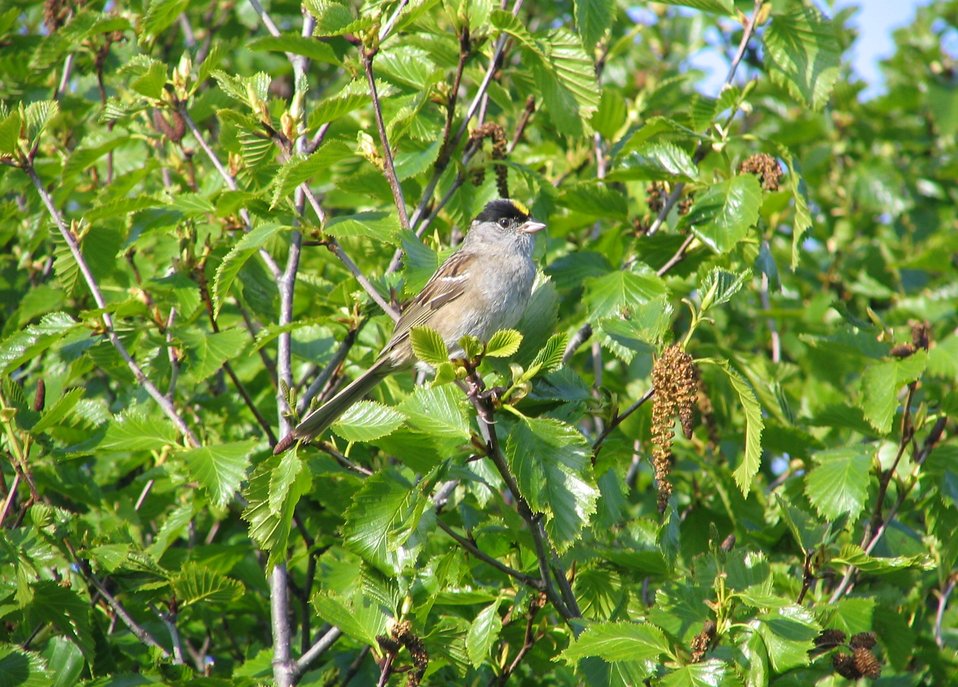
Golden-crowned Sparrow

Izembek National Wildlife Refuge